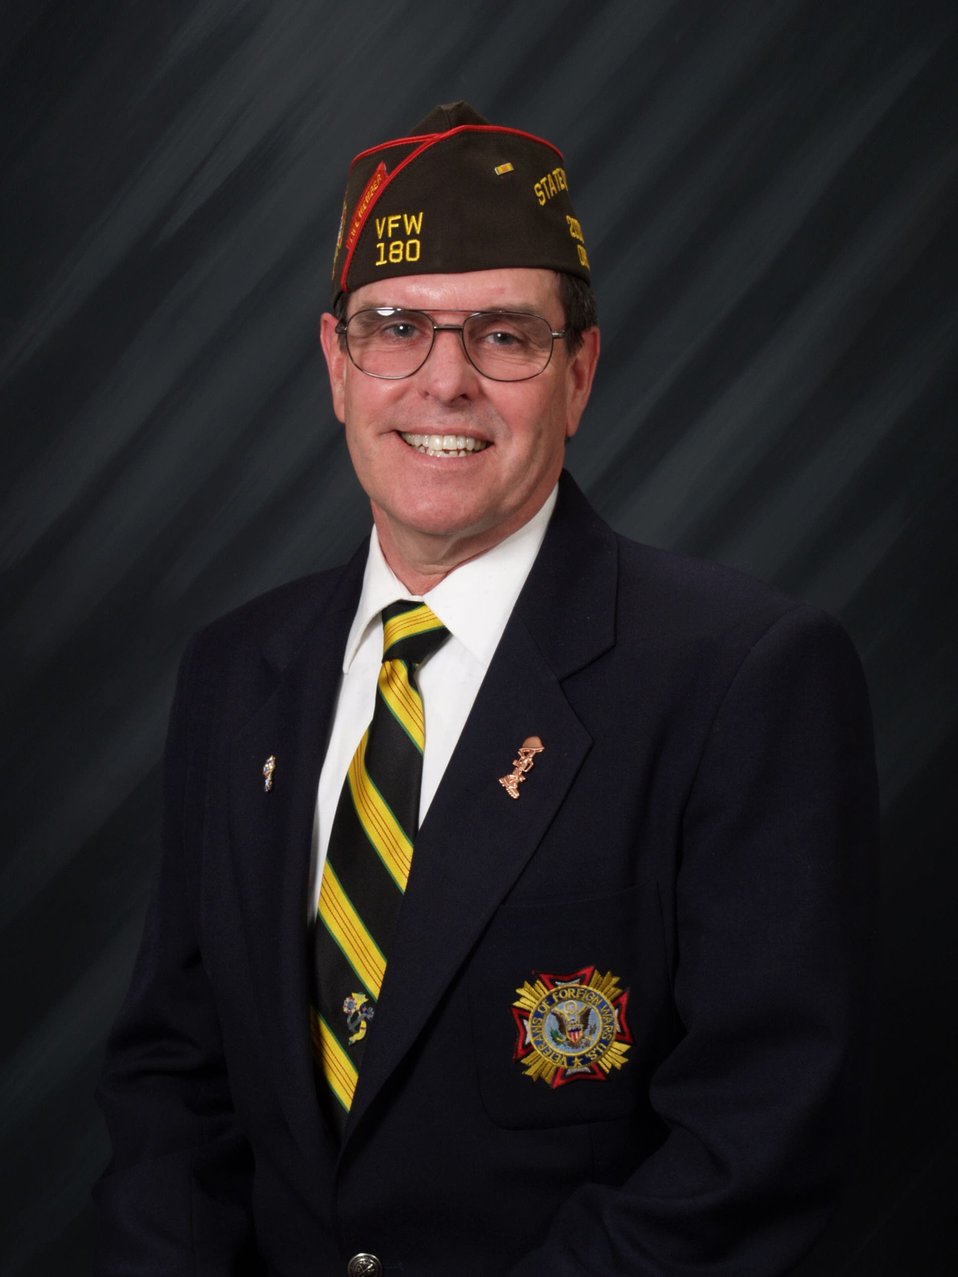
Tyler Marriott State Commander 2010-2011

Tyler Marriott, the Regional IT Security Manager in Regions 1 and 8, watched the beginnings of the Vietnam conflict on TV. He joined the Navy in 1968 with the philosophy, “They don't have boats!” He was sent to Aviation Electronics school – training that he says resulted in my future with the Service. Then, he volunteered for Vietnam and ended up on the air base in Da Nang, operating the communication station that linked the ground stations, like Da Nang, with the aircraft carriers. His team flew passengers/mail/cargo missions up and down the entire coast of South Vietnam. He flew 50 hours and became an “Aircrewman” and received his “Crew Wings.” After 450 Combat Hours he was awarded an “Air Medal.”

During his year in Vietnam a Reader's Digest about a Forest Service Forester convinced him that he wanted to become a Wildlife Biologist. His counselor advised me against it, saying: 'You have been gone for four years. Rachael Carson stirred up the world when you left and now EVERYONE is a Biologist! You can become a biologist, but you WON’T have a job when you are done. They are all gone!' He graduated in 1977 with a 4-year degree in Natural Resources Management: Forestry Concentration, and a 2-year degree in Design Drafting.

After several jobs in the natural resources field, Tyler took a job in 1996 with the Fish and Wildlife Service. He spent three years put to work on the “Y2K.” In 2001 I traveled to almost every Field Office in Region 1 to install Lotus Notes. In 2002, the Regional IT Security Manager and remembers the days before the Service even had an anti-virus program.

He has been involved with the Veterans of Foreign Wars (VFW) since 2002 and became the Post Commander in 2003, District Commander in 2005 then then finally State Commander 2010-2011.